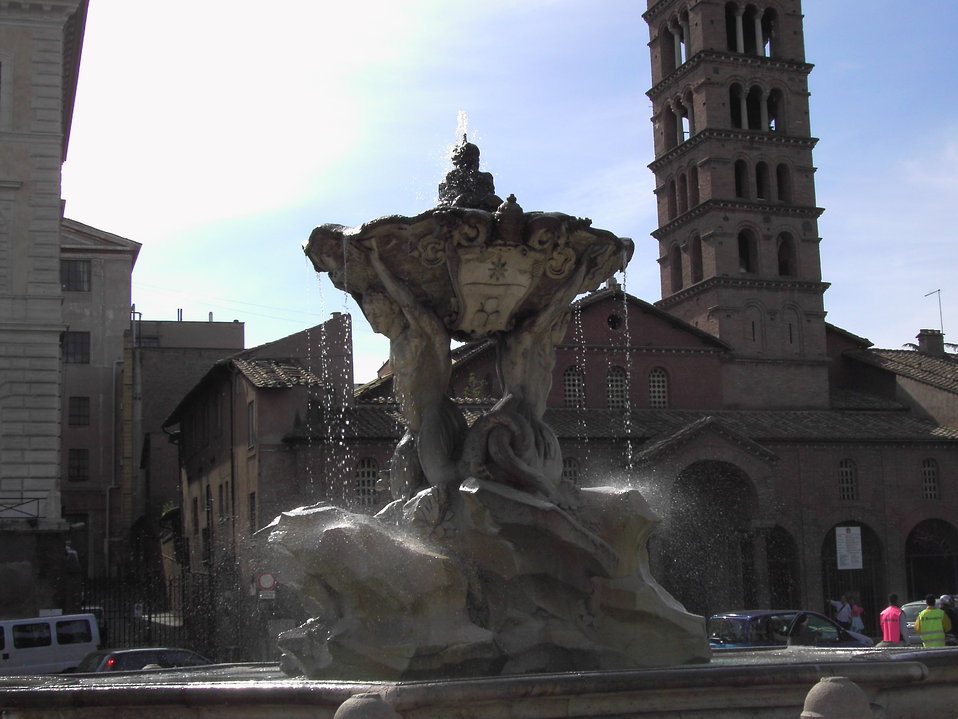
050424-010FontanaAllaBoccaDellaVerita